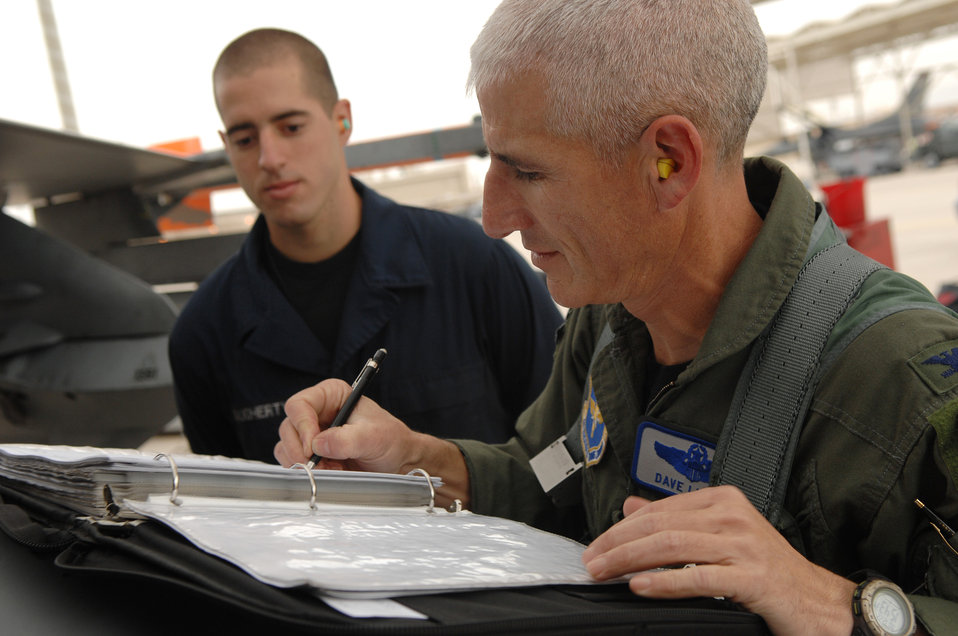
Luke pilot reaches F-16 milestone

Col. David Lujan, 56th Operations Group deputy commander, fills out his flight log Dec. 22 at Luke Air Force Base, Ariz., moments after completing his 4,000th hour in the F-16 Fighting Falcon. He is the 17th pilot to reach this milestone.